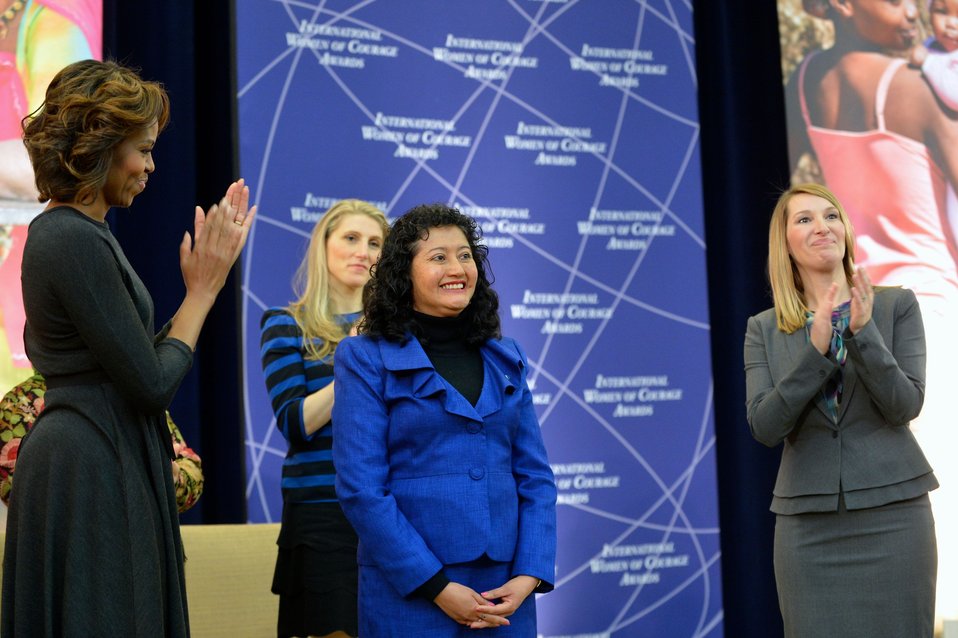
First Lady Michelle Obama and Deputy Secretary Higginbottom Honor Dr. Iris Yassmin Barrios Aguilar of Guatemala

First Lady Michelle Obama and Deputy Secretary Heather Higginbottom honor 2014 International Women of Courage Awardee Dr. Iris Yassmin Barrios Aguilar, a Tribunal President of the High Risk Court in Guatemala, at the 2014 Secretary of State’s International Women of Courage Award Ceremony at the U.S. Department of State in Washington, D.C., on March 4, 2014.